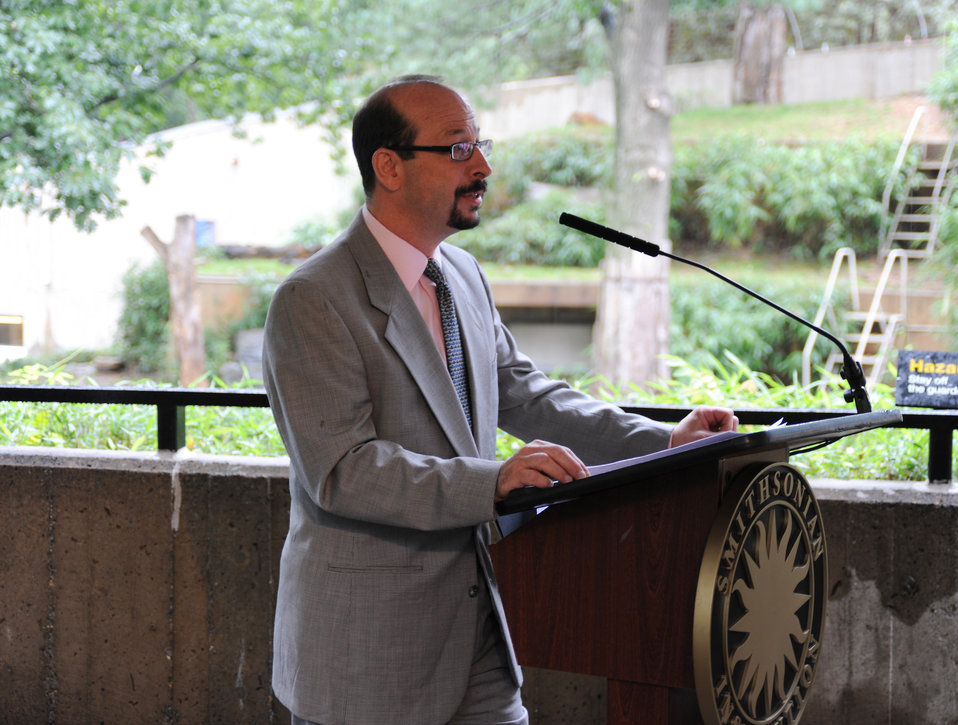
Save Vanishing Species Stamp First Day of Issue